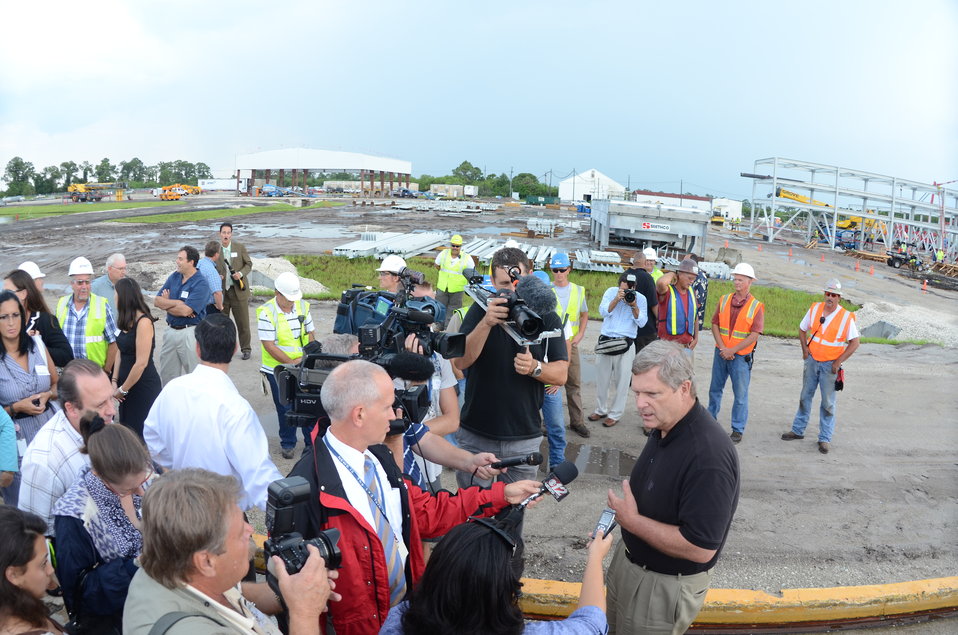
Agriculture Secretary Tom Vilsack visited the waste-to-energy bioprocessing facility under construction in Florida today to announce several small grants to support research into renewable fuels. The INEOS New Planed BioEnergy facility in Vero Beach, Florida, was granted a conditional Agriculture loan guarantee earlier this year to help build and operate a biorefinery capable of producing 8 million gallons per year of cellulosic ethanol and 6 megawatts of electricity.